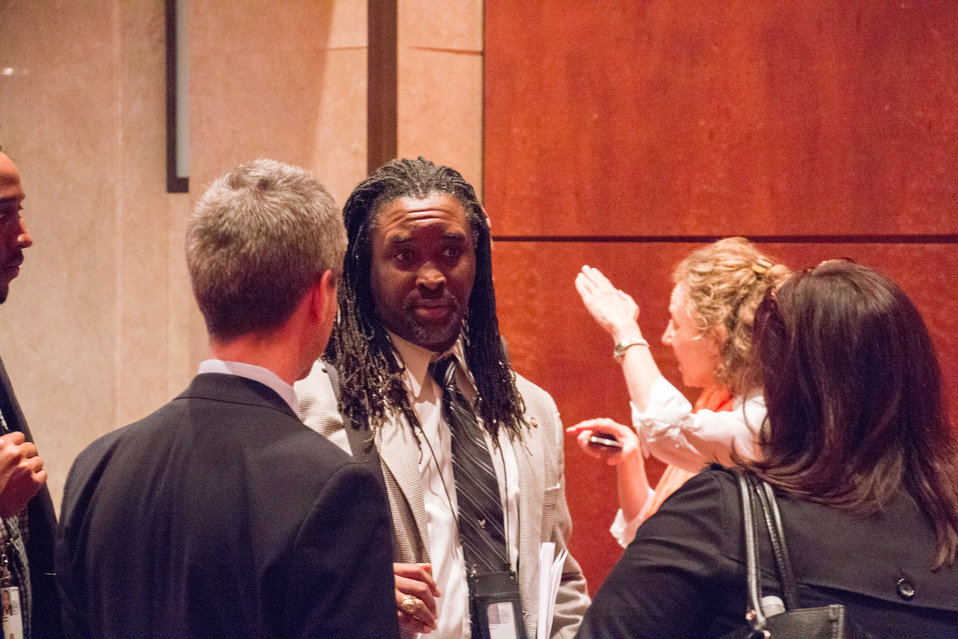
VHAP Launch (511 of 511)